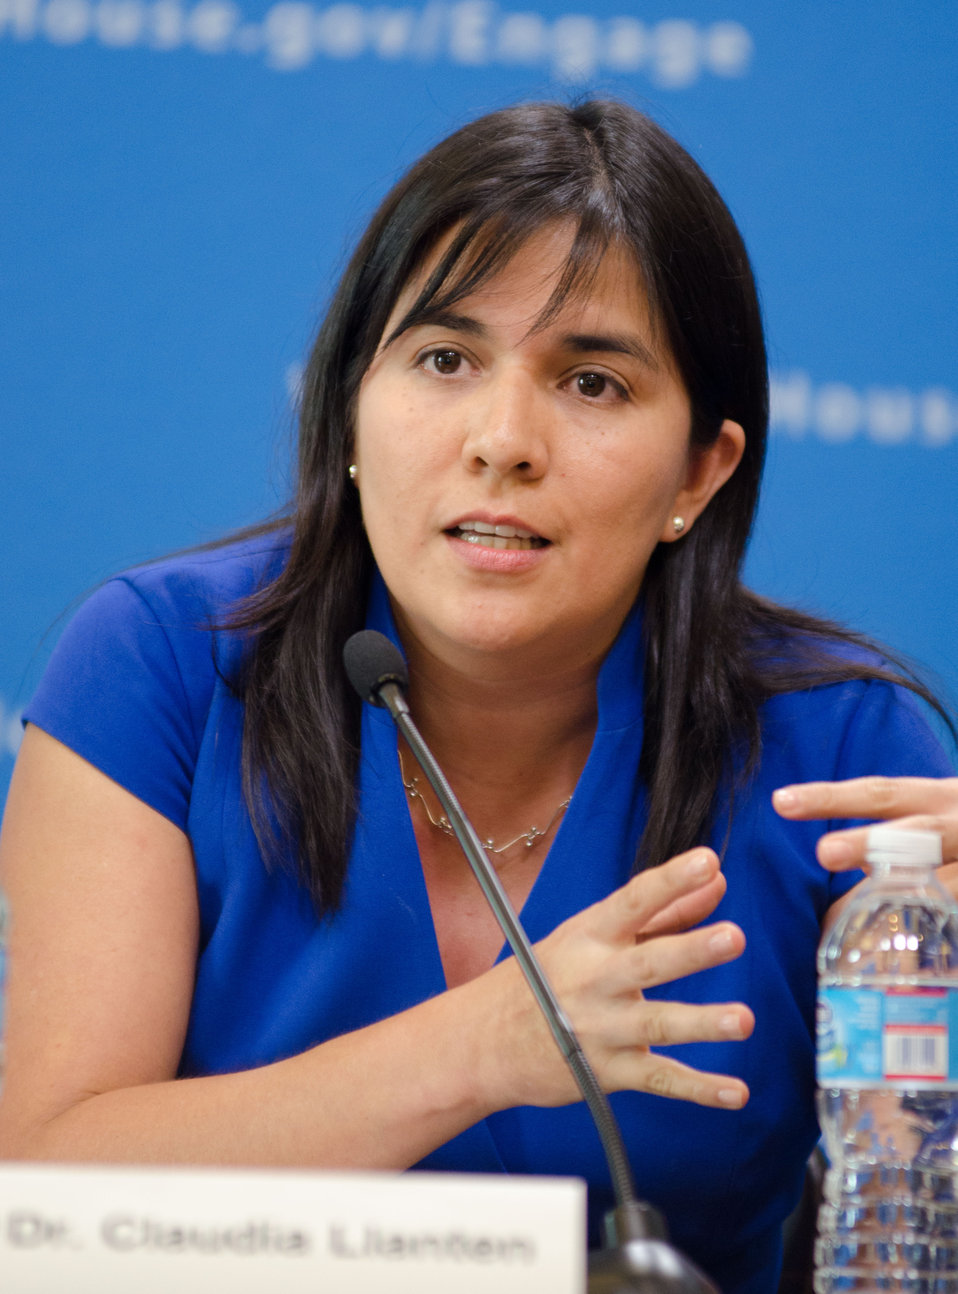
Catholic Medical Mission Board Project Director Dr. Claudia Llanten talked about food sources situations in Peru, during an event her work and ten other honorees recognized for her efforts to reduce hunger and increase food security in the U.S. and internationally at the White House Champions of Change Strengthening Food Security at Home and Abroad Event held at the White House on Thursday, September 6, 2012, in Washington, D.C.